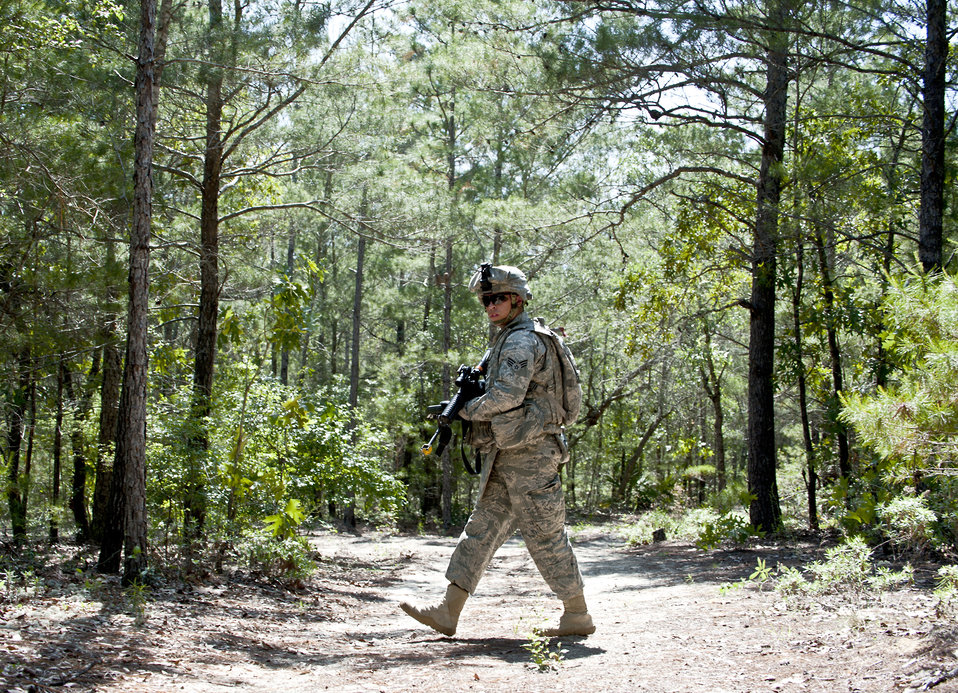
Finding the way

Senior Airman Devin Tiger crosses a forest trail during a scouting mission April 28, 2011, as part of an exercise at Eglin Air Force Base, Fla. Airman Tiger is assigned to the 72nd Security Forces Squadron at Tinker Air Force Base, Okla.